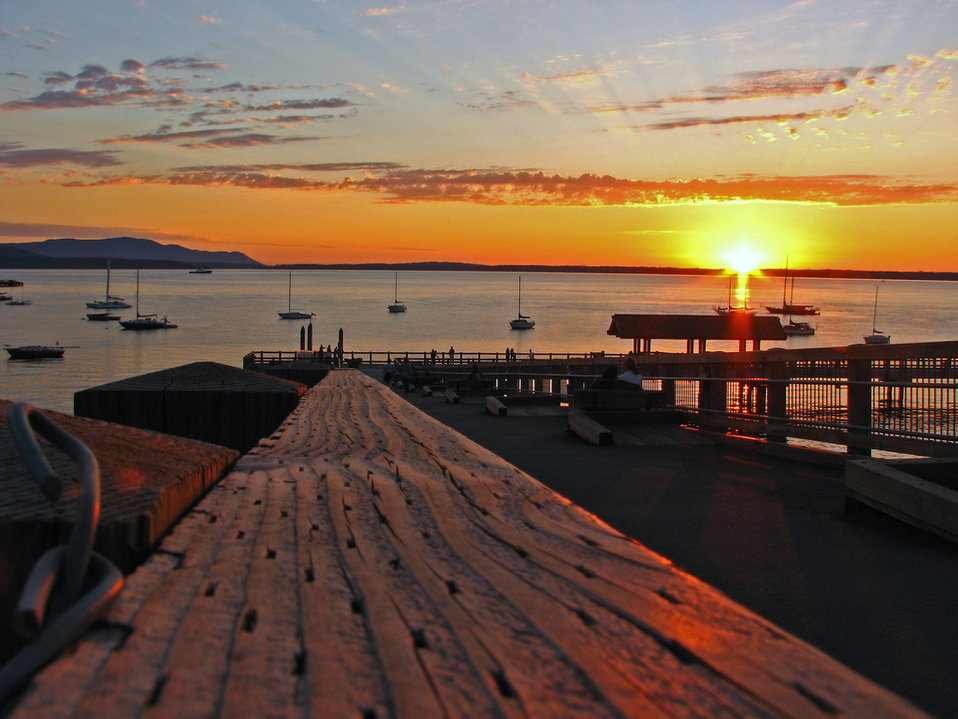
Bellingham Bay at sunset

Sunset over Bellingham Bay in northern Puget Sound with Lummi Island in the background.

Learn more about the Puget Sound Ecosystem

Learn more about EPA